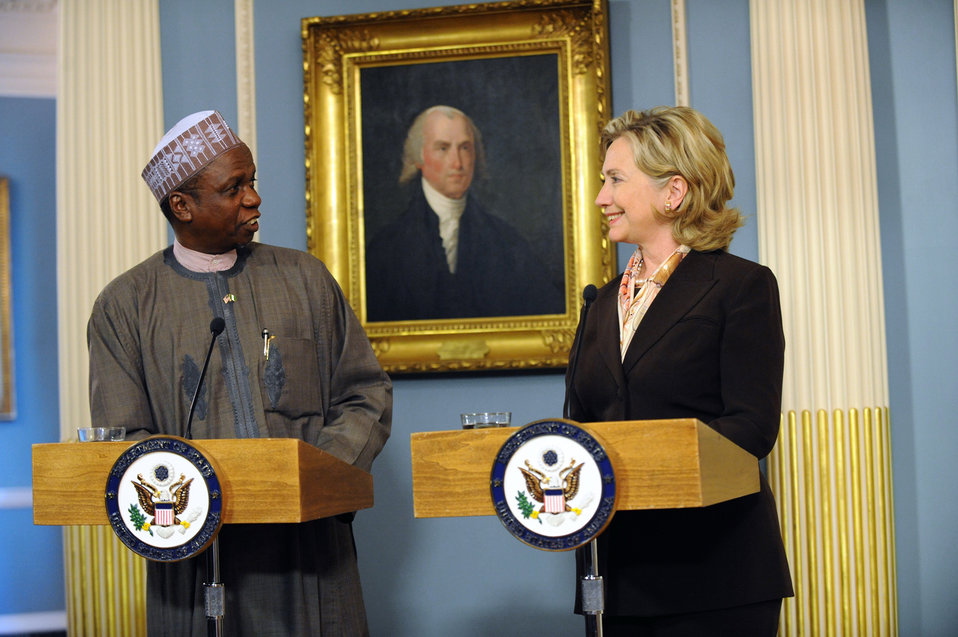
Secretary Clinton Meets With Nigerian Secretary to the Federal Government

U.S. Secretary of State Hillary Rodham Clinton holds a bilateral meeting with Nigerian Secretary to the Federal Government Yayale Ahmed, at the U.S. Department of State in Washington, DC April 6, 2010.